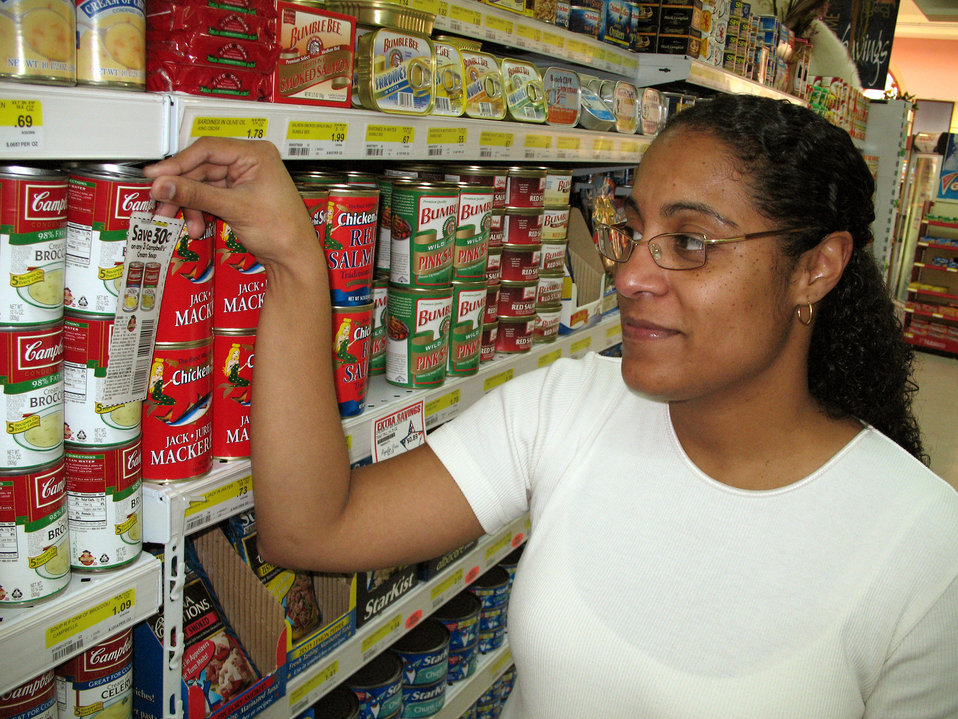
Lajes 'Coupon Lady' saves Airmen thousands

Jasmin Malboeuf, known as the Lajes Coupon Lady, tapes coupons to products at the commissary at Lajes Air Base, the Azores. People were donating coupons that were going to waste until Mrs. Malboeuf began taping them to products in the commissary.